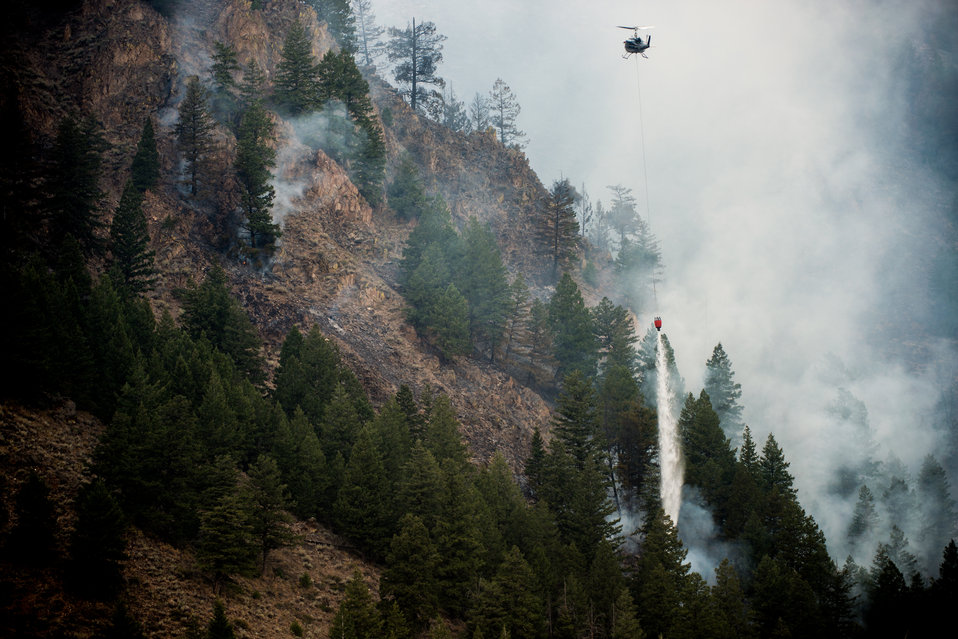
A Bell UH-1H helicopter pilot releases a full load of water from the Bambi Bucket, below it, the collapsible bucket utilizes a pilot-controlled release valve, that is able to deliver a concentrated column of water from the helicopter to the fire on the Carbonate Ridge, rising behind the Wood River, during Beaver Creek Fire, west of Hailey, ID, on Monday, Aug 19, 2013.